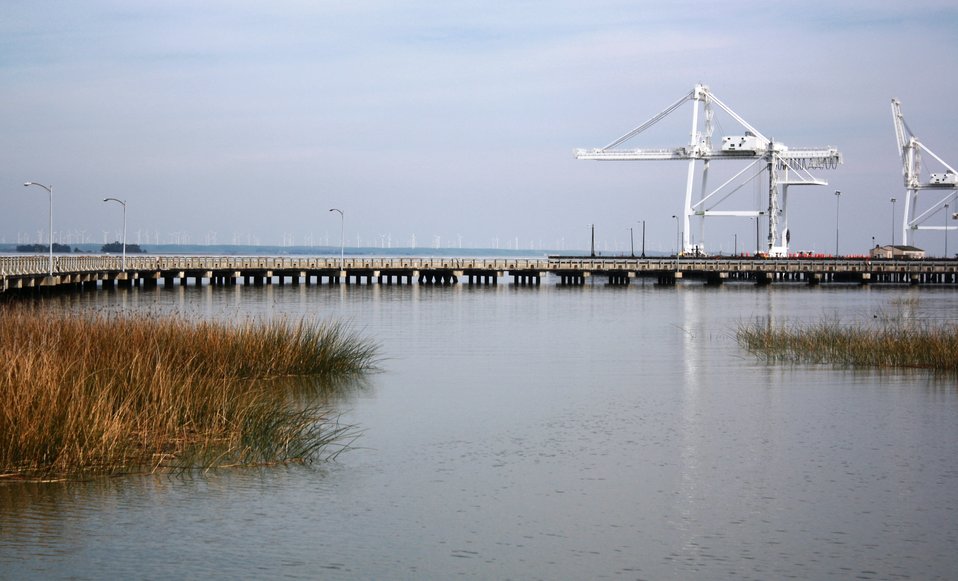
Pier 3 at Military Ocean Terminal Concord

A gantry crane's boom rests in the down position on Pier 3 at Military Ocean Terminal Concord March 3, 2013 in Concord, Calif. Pier 2 has been inoperable for the past five years and is a key component for MOTCO, which represents nearly 25 percent of the nation’s total ammunition shipping capability. The Department of the Army and the U.S. Army Corps of Engineers Sacramento District have been developing three viable scenarios for Pier 2 and/or Pier 3 modernizations - all of which would allow MOTCO to meet its mission safely and efficiently. The district is gathering public input to determine the best approach to modernize the piers, and hopes to outline that plan in the final environmental impact statement expected fall 2014 with possible construction tentatively scheduled in 2016. Photo cropped for emphasis.